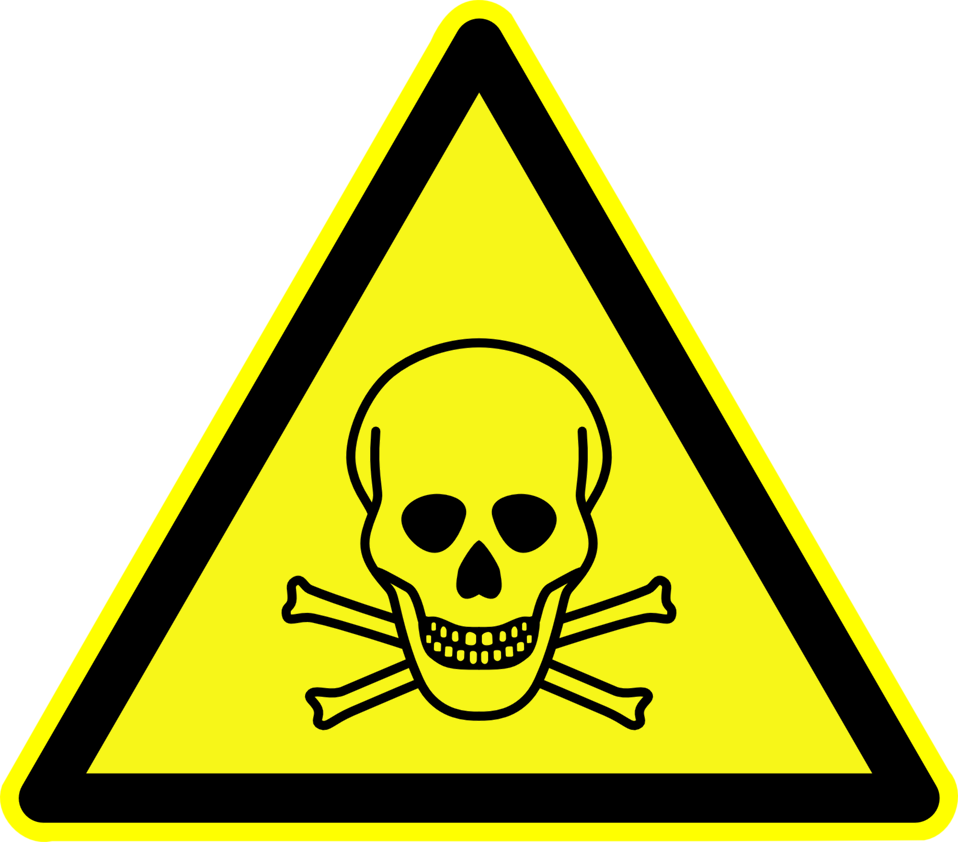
Deutsch: Warnung vor giftigen Stoffen, Warnzeichen D-W003 nach DIN 4844-2 Poisonous substances, warning sign D-W003 according to German standard DIN 4844-2